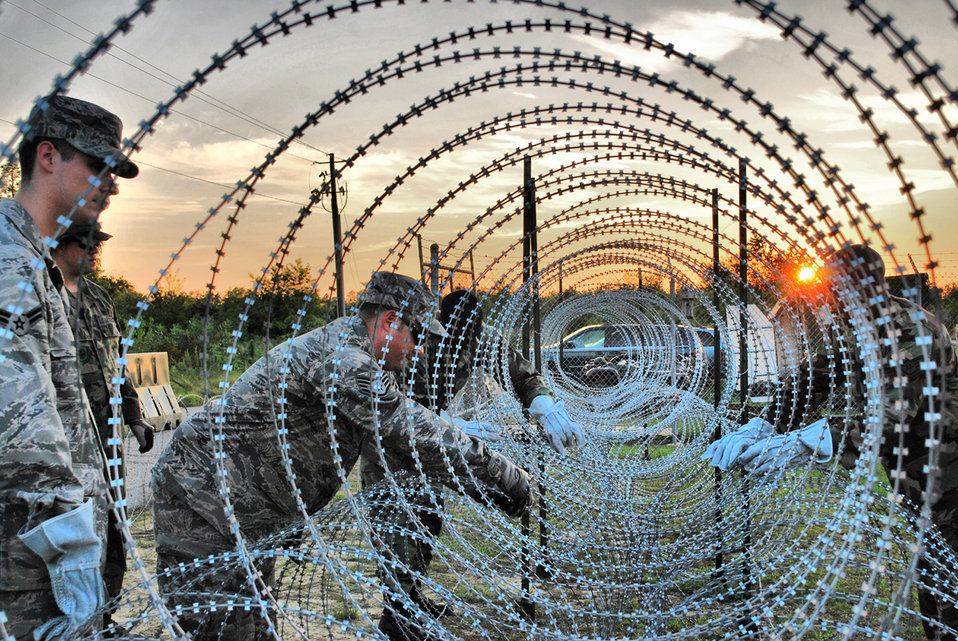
No one is getting in here

Airmen from the 621st Contingency Response Wing at McGuire Air Force Base, N.J., construct razor wire fences around their camp perimeter June 24 during a noncombatant evacuation exercise at Mackall Army Airfield, N.C. CRW Airmen manned defensive fighting positions as the exercise scenario became